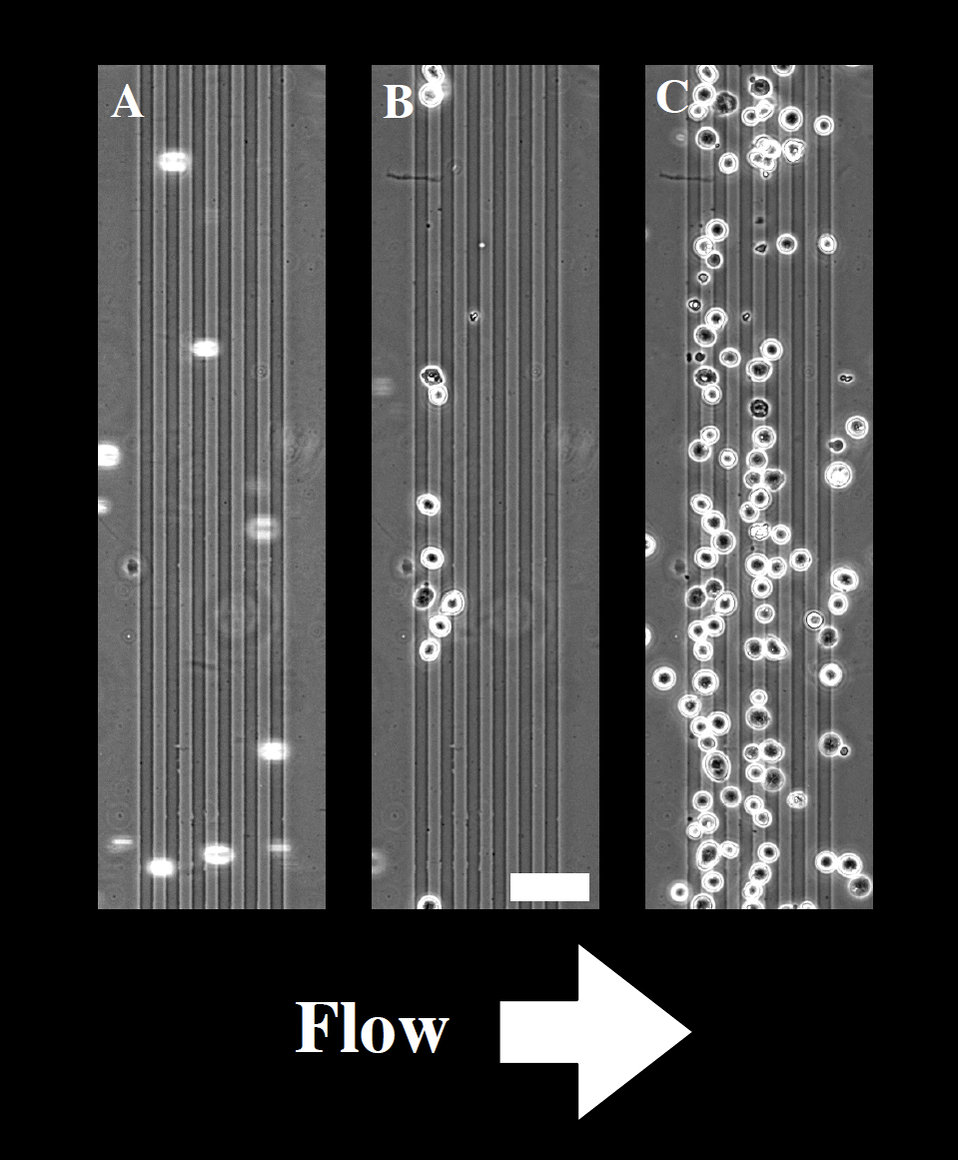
Cell Capture Method; Medical Research

(A) As cells flow down the channel, they pass over the electrodes (vertical dark gray lines) until (B) the electrodes are activated and the cells are trapped and anchored. (C) The cells remain adhered even while being exposed continuously to a fluid flow. Scale bar 50 micrometers.